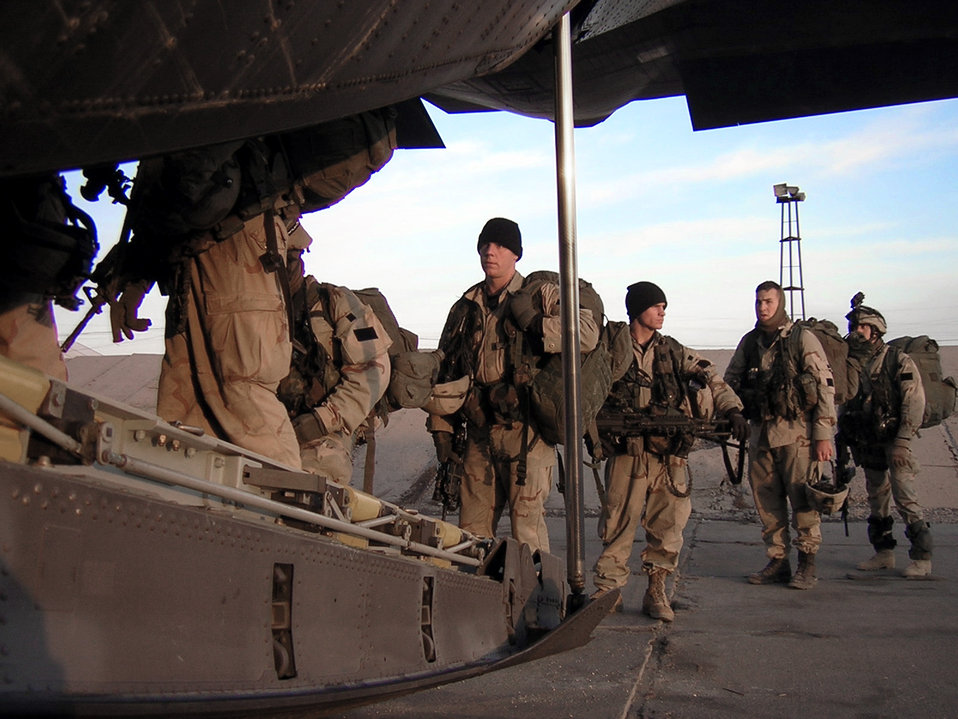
Load 'em up

KARSHI-KHANABAD AIRFIELD, Uzbekistan -- The 416th Air Expeditionary Group's aerial port flight here takes care of soldiers who need transportation to forward-deployed locations. The aerial port team is deployed from the Nevada Air National Guard's 152nd Airlift Wing and supporting Operation Enduring Freedom.